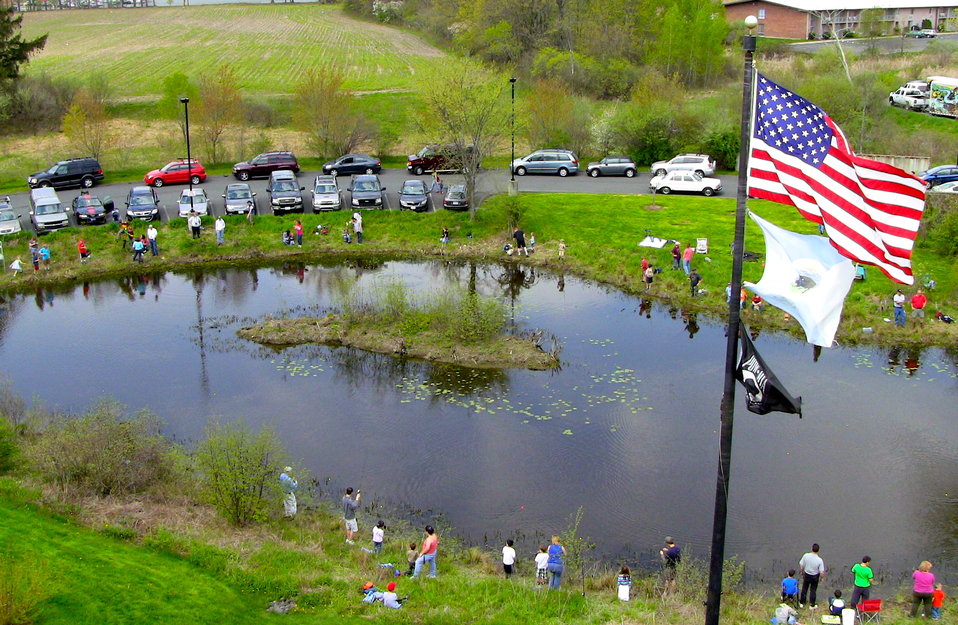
Overhead shot of kids fishing

Fishing Derby held at the USFWS regional office in Hadley, MA on May 7, 2011.